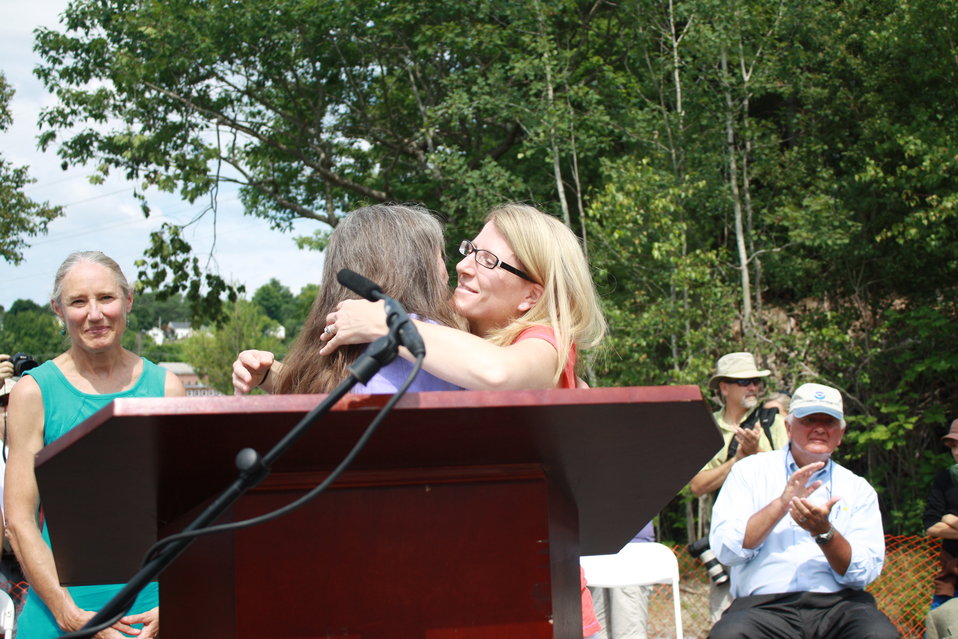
Veazie Dam Removal

Laura Rose Day, Executive Director of the Penobscot River Restoration Trust, hugs Elizabeth Maclin, Vice President for Eastern Conservation, Trout Unlimited.